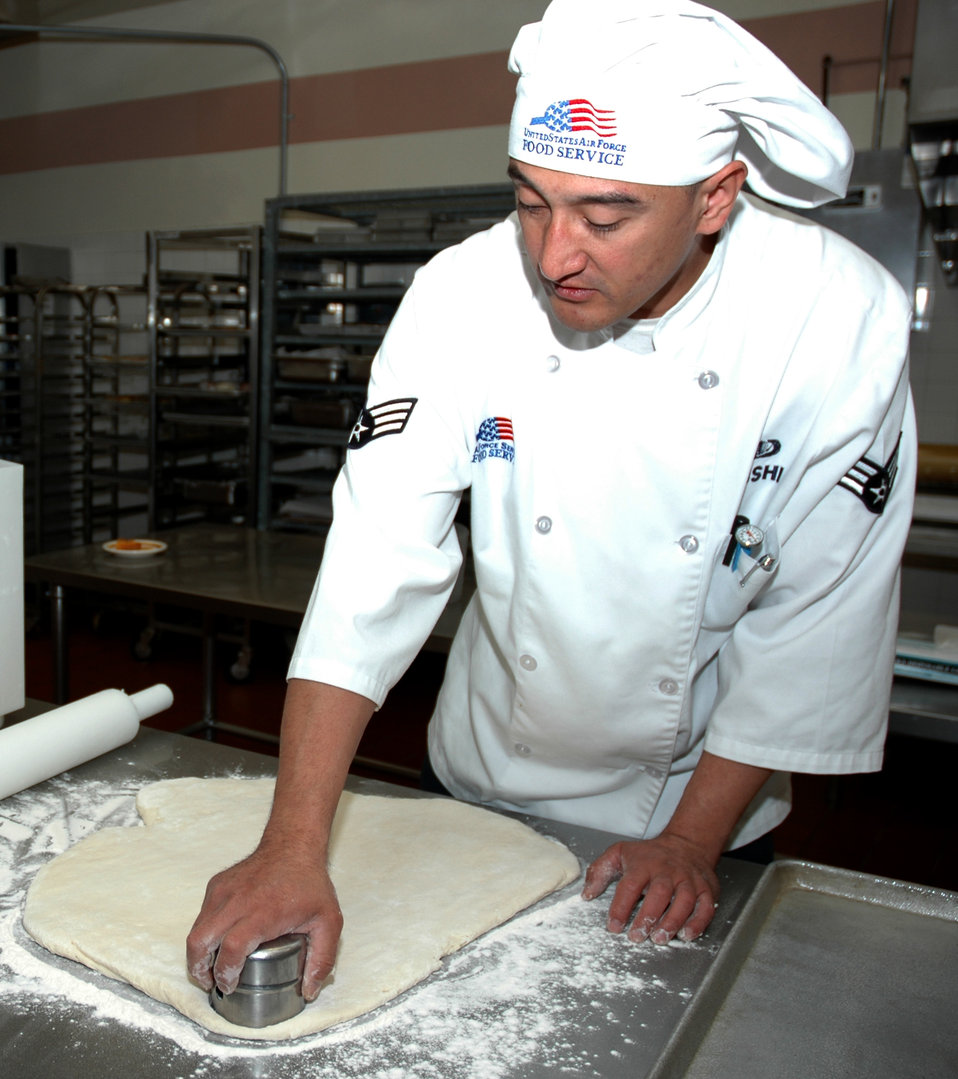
Baker's Night Delights

Senior Airman Tommey Fushi, a chef with the 366th Services Squadron at Mountain Home Air Force Base, Idaho, makes biscuits the night of March 27. When other Airmen are enjoying their off-duty time, Airman Fushi spends his nights baking various breads, cookies, cakes and other treats for the Wagon Wheel Dining Facility.